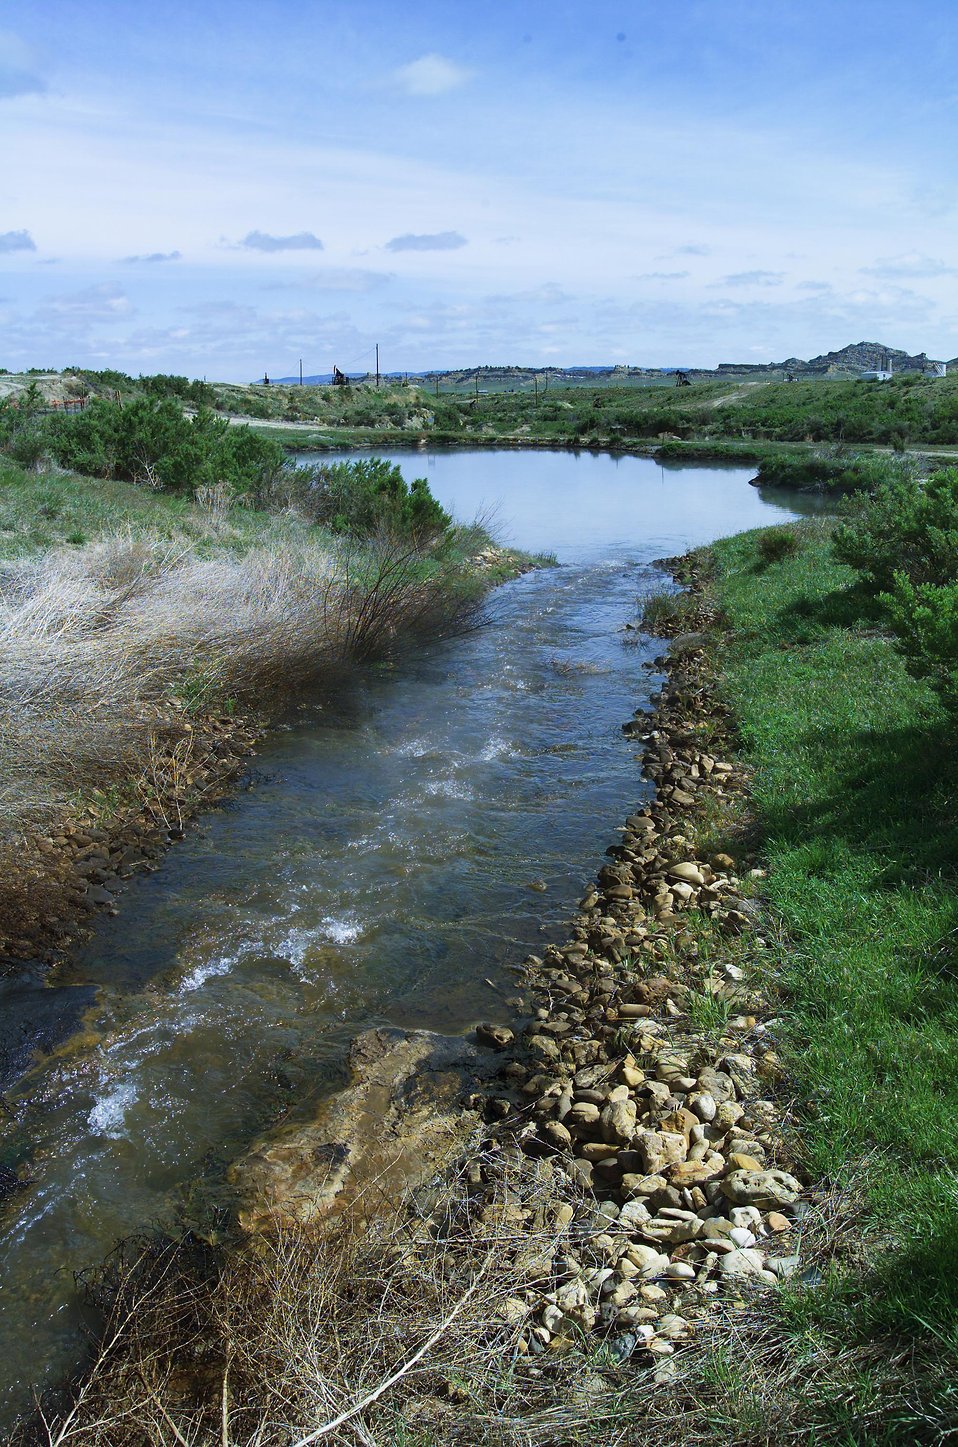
Teapot Creek runs through Naval Petroleum Reserve No.3 (NPR-3), also known as Teapot Dome Oil Field near Casper, Wyoming.

The Rocky Mountain Oilfield Testing Center (RMOTC) is a Department of Energy field test site for emerging and developing technologies to address critical energy issues. The field test site, located on Naval Petroleum Reserve No.3 (NPR-3), is a 10,000-acre site. There are approximately 700 well bores with 600 producing wells ranging in depth from 500 to 5,000 feet.